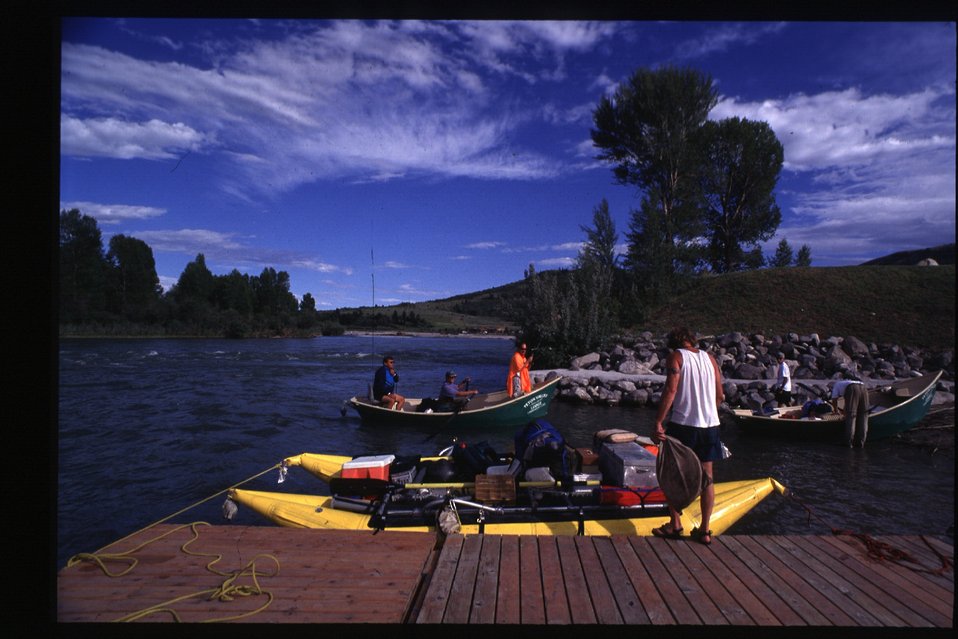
Rafting in white water Dorey South Fork of Snake River Idaho Falls Field Office USRD Upper Snake River District